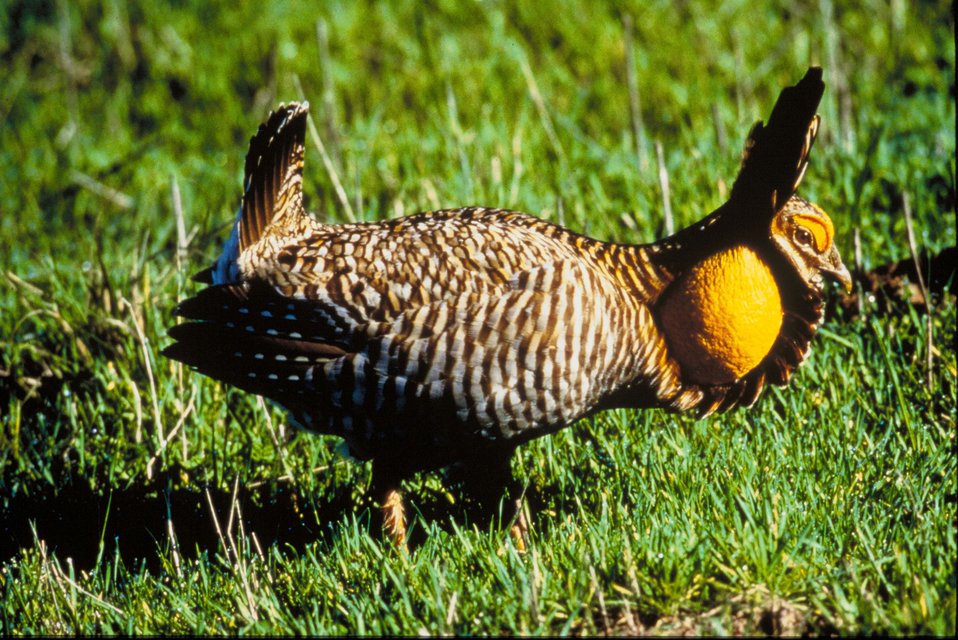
Attwater's prairie chicken

An endangered Attwater's prairie chicken inflates the orange air sacks on the sides of its neck to make a “booming” sound, in a spring mating ritual popular with visitors to the Attwater Prairie Chicken National Wildlife Refuge in Texas. (George Lavendowski)